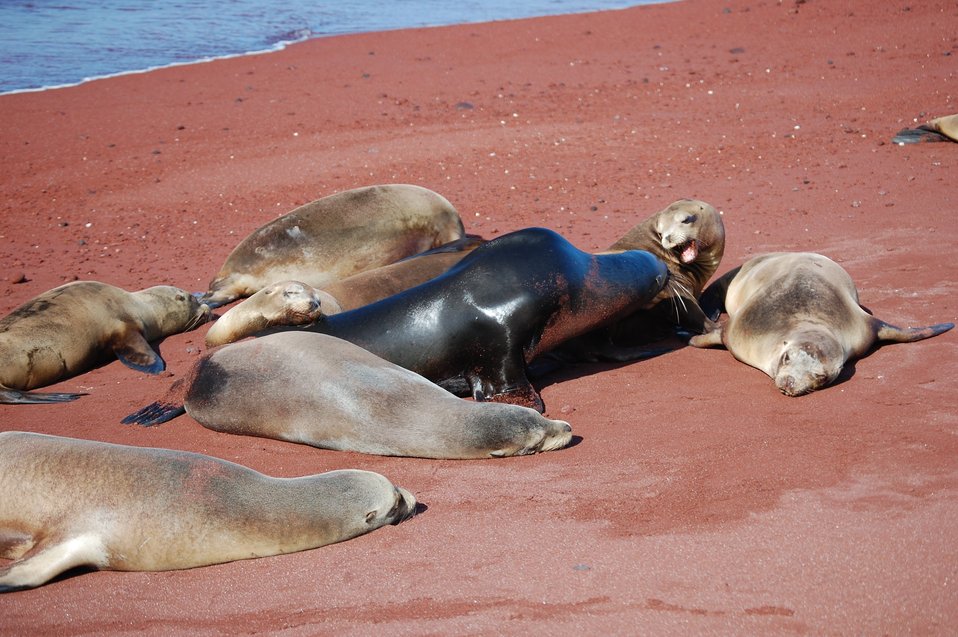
Bull sea lion amongst his harem.